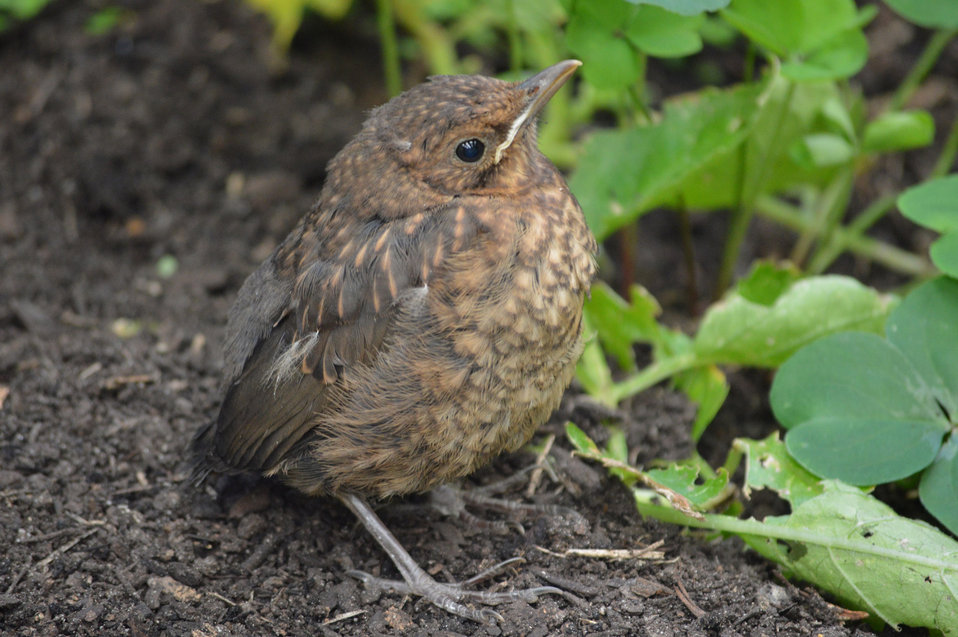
Bird posing in garden

Young bird posing in garden.